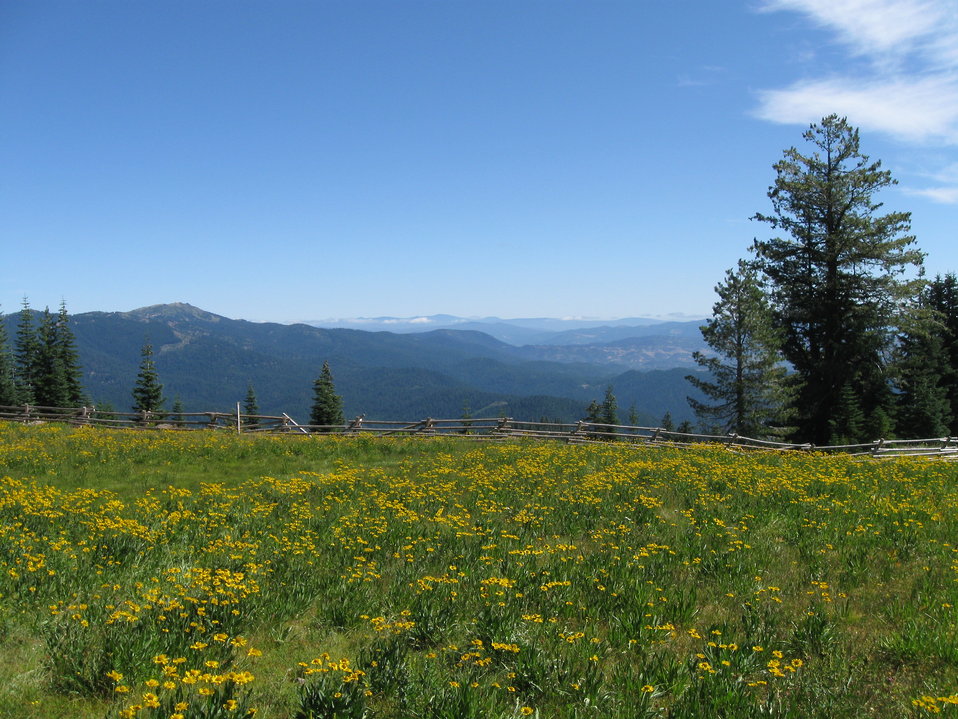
Alpine Wet Meadow in the Klamath Mountains

High alpine wet meadows are uncommon. This meadow is located in Siskiyou County, California, near the Oregon border. The US Fish and Wildlife Service Partners for Fish and Wildlife biologists joined with a private landowner on a fencing project that has benefited hydrology and is helping to protect habitat for wildlife including the rare Mardon Skipper butterfly.